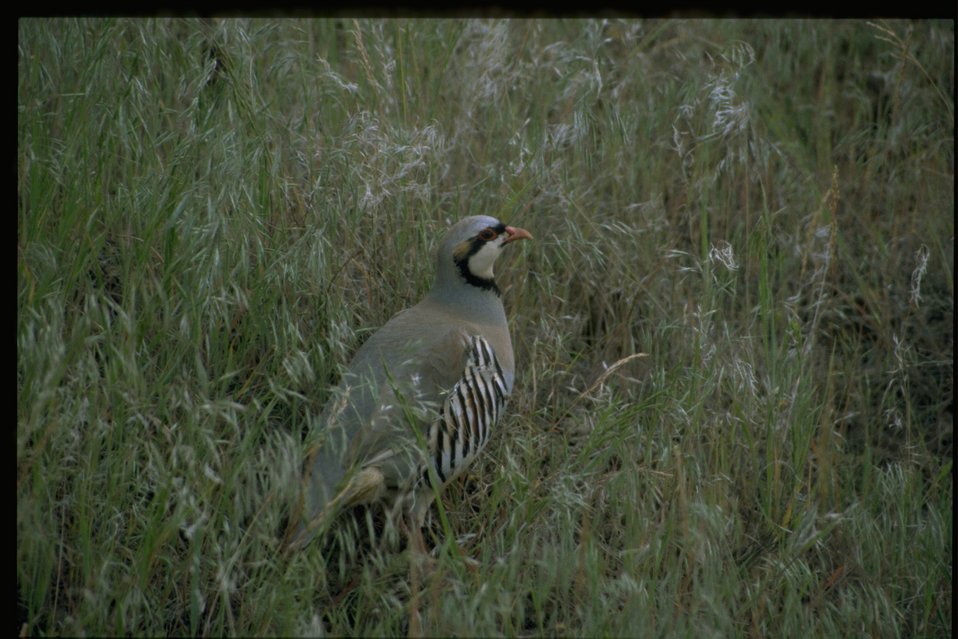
Medium shot of chukar (Alectoris chukar).